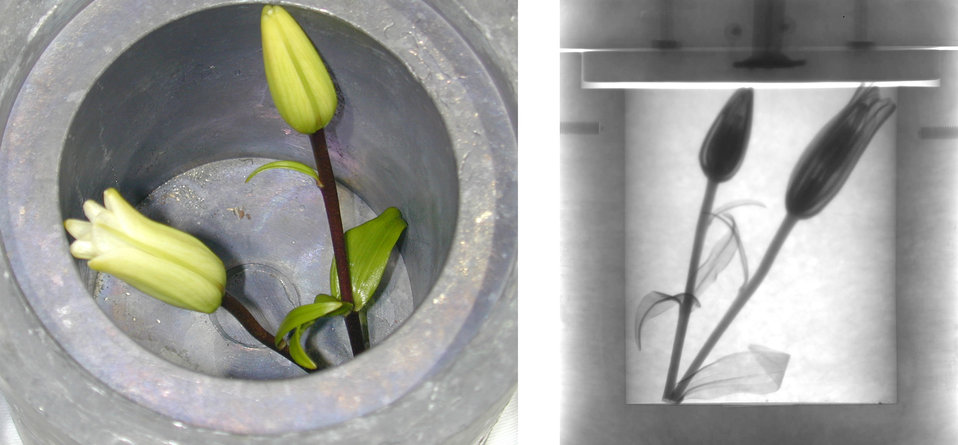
Neutron Image of Asiatic Lilies Inside a Lead Cask

Asiatic lilies inside a lead cask. A digital camera took an overhead picture of the open cask (left) and a neutron imaging system photographed the lilies through the lead walls of the cask (right). This image demonstrates the power of neutrons to easily pass through otherwise 'impenetrable' materials, such as the lead cask, and yet have enough sensitivity to reveal fine details such as the leaf veins of the Asiatic lilies. The neutron image has been sharpened slightly to improve black-and-white contrast for viewing on the web. The imaging capabilities at the NIST Center for Neutron Research are used for many applications such as studying the inner workings of fuel cells.